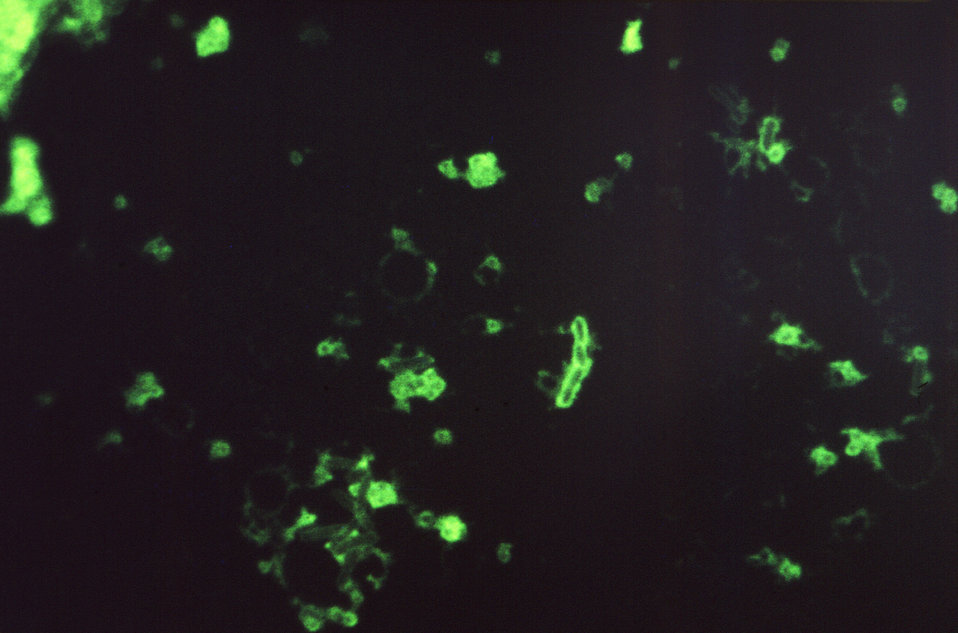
Taken from a pure culture, and magnified 98X, this fluorescent antibody (FA)-stained photomicrograph revealed the presence of a number of Yersinia pestis plague bacilli, formerly Pasteurella pestis, Gram-negative bacterium.